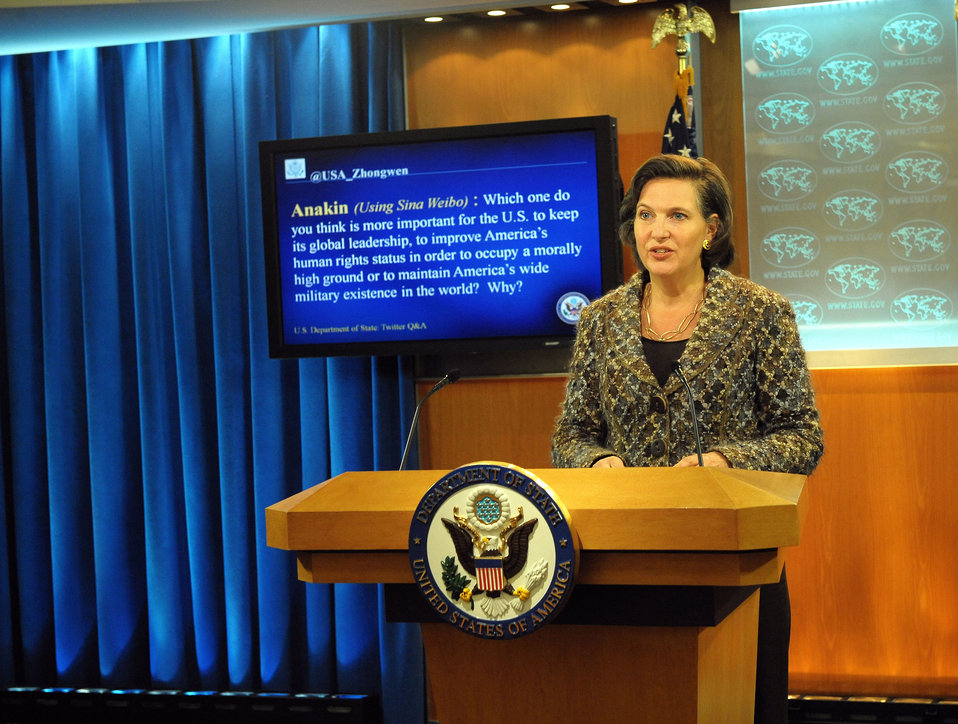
Spokesperson Nuland Responds to a Question from @USA Zhongwen

Victoria Nuland, Spokesperson for the U.S. Department of State, answers a question selected from the Department’s official Chinese Twitter feed, @USA Zhongwen, on January 6, 2012.